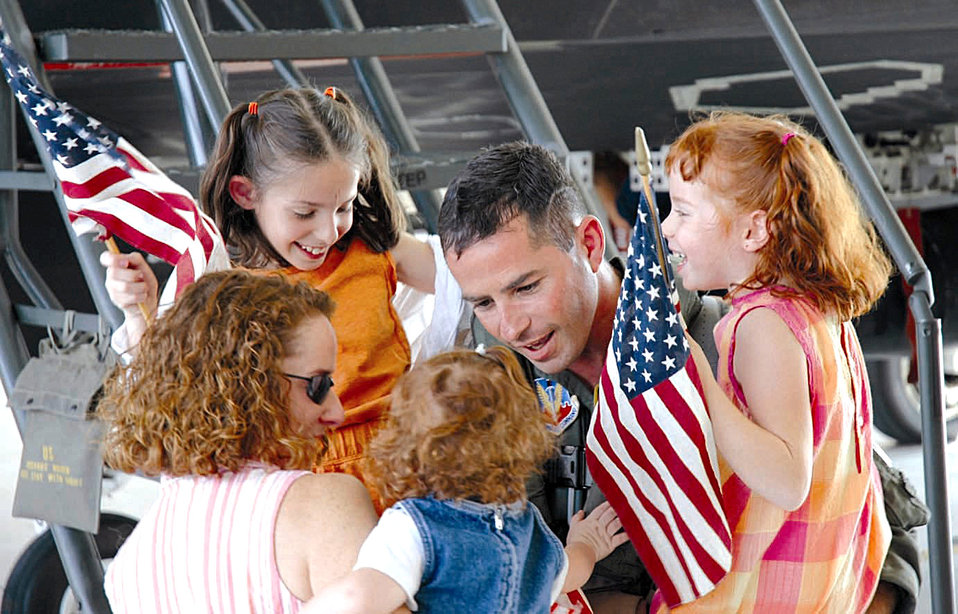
Welcome home, Daddy!

HOLLOMAN AIR FORCE BASE, N.M. -- Maj. Brian Collins, greets his family Oct. 10 after returning from Kunsan Air Base, South Korea. The 8th Fighter Squadron's Airmen and more than 250 Airmen here have been deployed since May supporting of the United States' national defense objectives in the Western Pacific Region.